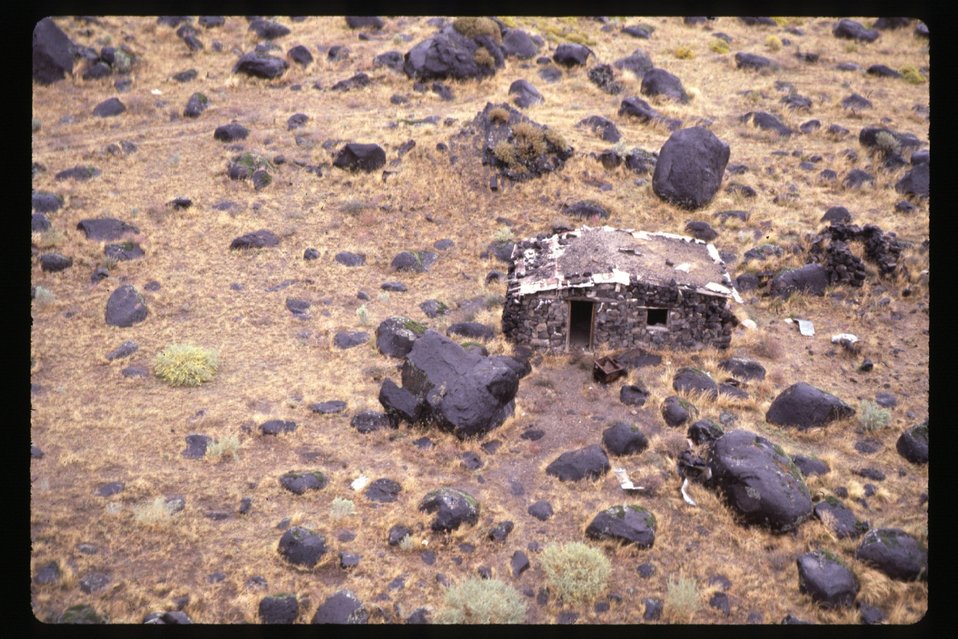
Old house Archeology LSRD Lower Snake River District